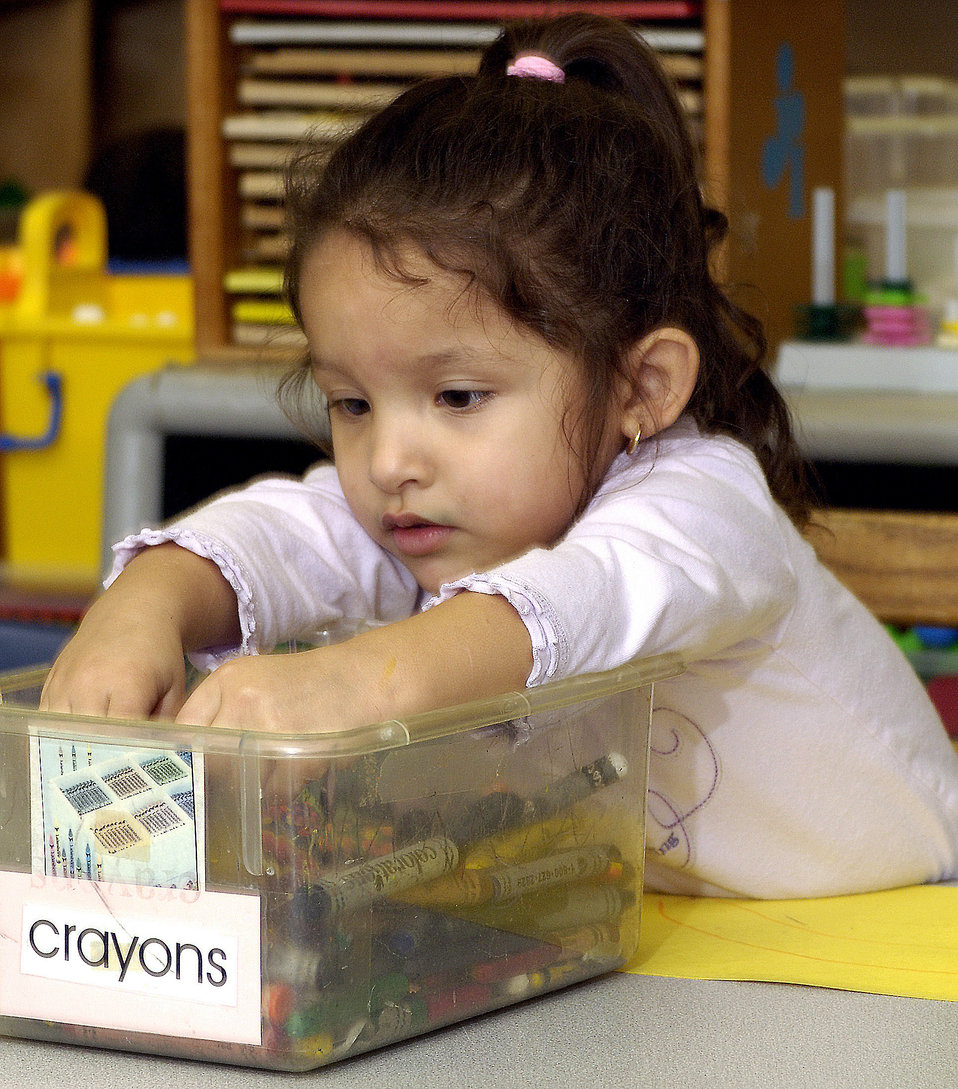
Art expression

KEESLER AIR FORCE BASE, Miss. (AFPN) -- Emily Guinn, 3, reaches for a marker to start coloring in her drawing from Hurricane Katrina at the child development center Feb. 21. The children's drawings are displayed throughout the center as a means for them to express their feelings about the hurricane. Emily's father is Juan Guinn.